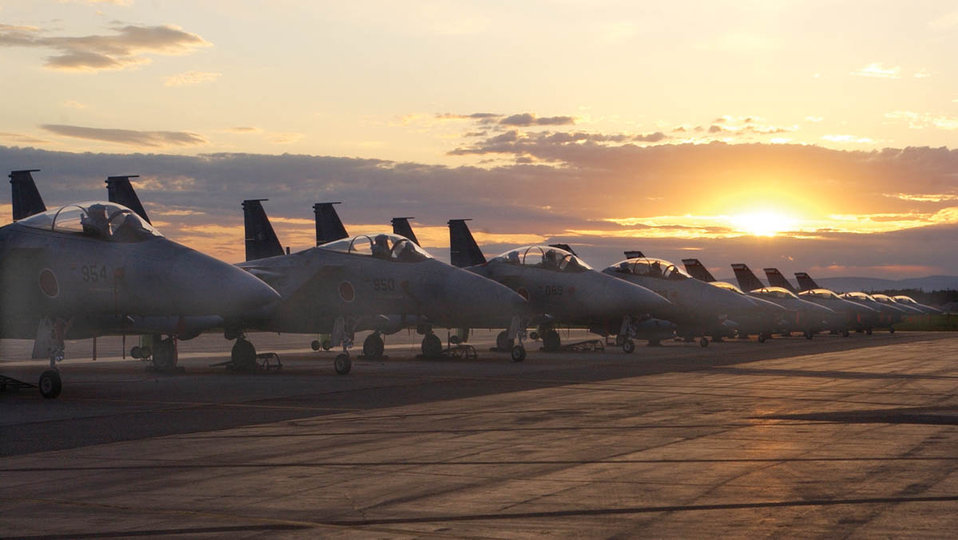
Cooperative Cope Thunder kicks off

EIELSON AIR FORCE BASE, Alaska -- The sun sets June 8 behind Japanese F-15s and F-16 Fighting Falcons from the Texas Air National Guard's 149th Fighter Wing.